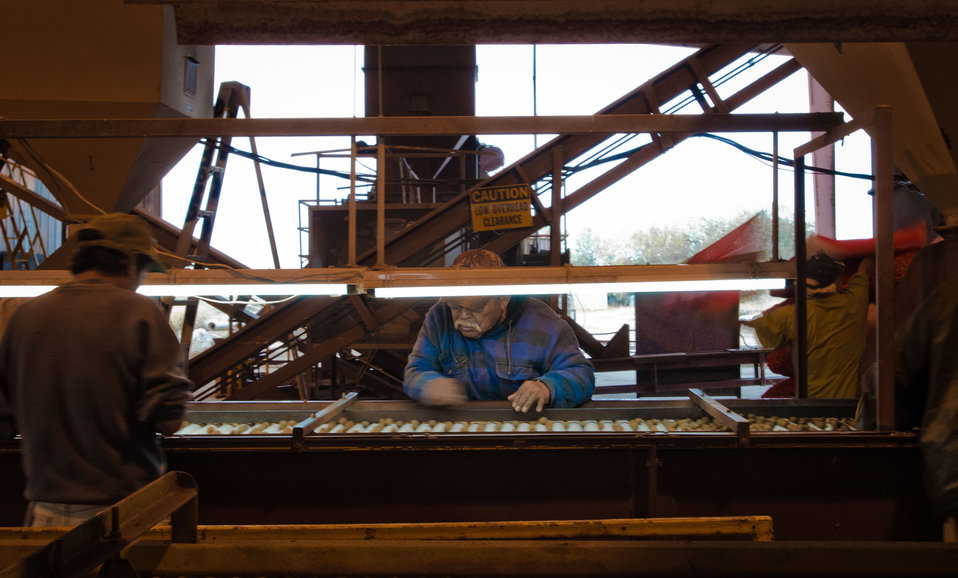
Left to right, Jesus Gomez, Teodoro Gamez, Jose Camacho and Juan Ayala apply their keen eye to sort out any pecans that are less than perfect from the last load of this season's harvest at Arrowhead Farms of Crystal City, TX, on Friday, December 9, 2011, owned by Mr. Akram Mohammad, a pecan farmer since 2005. The 719 acre farm with 10,000 trees, features some orchards with underground micro irrigation system that feeds water to the roots of 4,380 pecan trees on 146 acres. Mr. Mohammad said, “USDA (U.S. Department of Agriculture) was essential to my business and trees surviving the recent exceptional drought. The trees were stress free thanks to underground micro-irrigation. This is essential to the future growth of Texas agriculture and good for America.” U.S. Department of Agriculture’s (USDA) Environmental Quality Initiative Program (EQIP) awarded Mr. Mohammad a $130,000 grant in 2008. He provided $26,000 for the balance of the $156,000 total cost to install a 146-acre underground micro-irrigation for 4,380 trees.